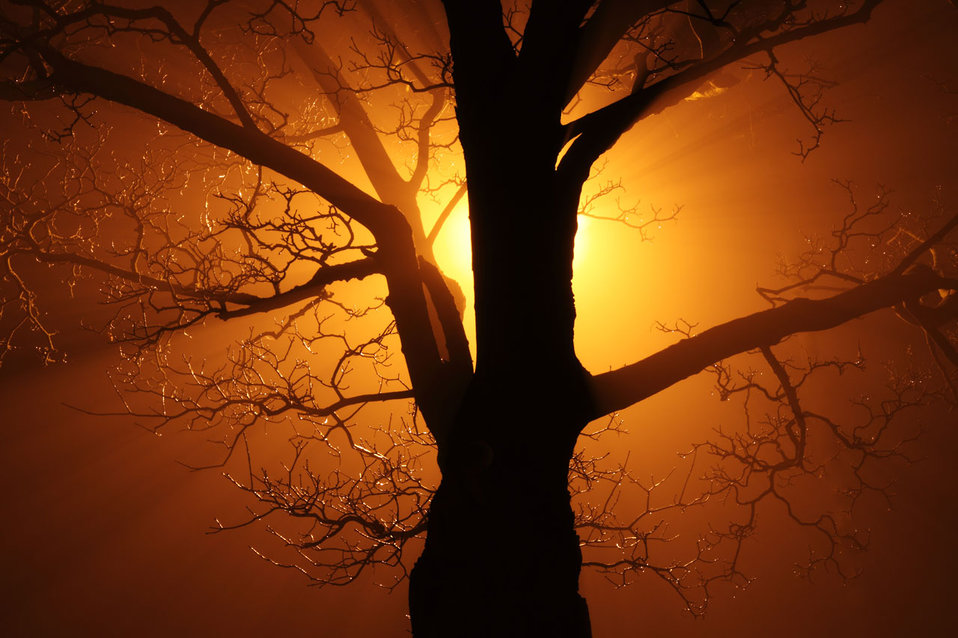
Tree in fog at night

Tree silhouette in fog at night.